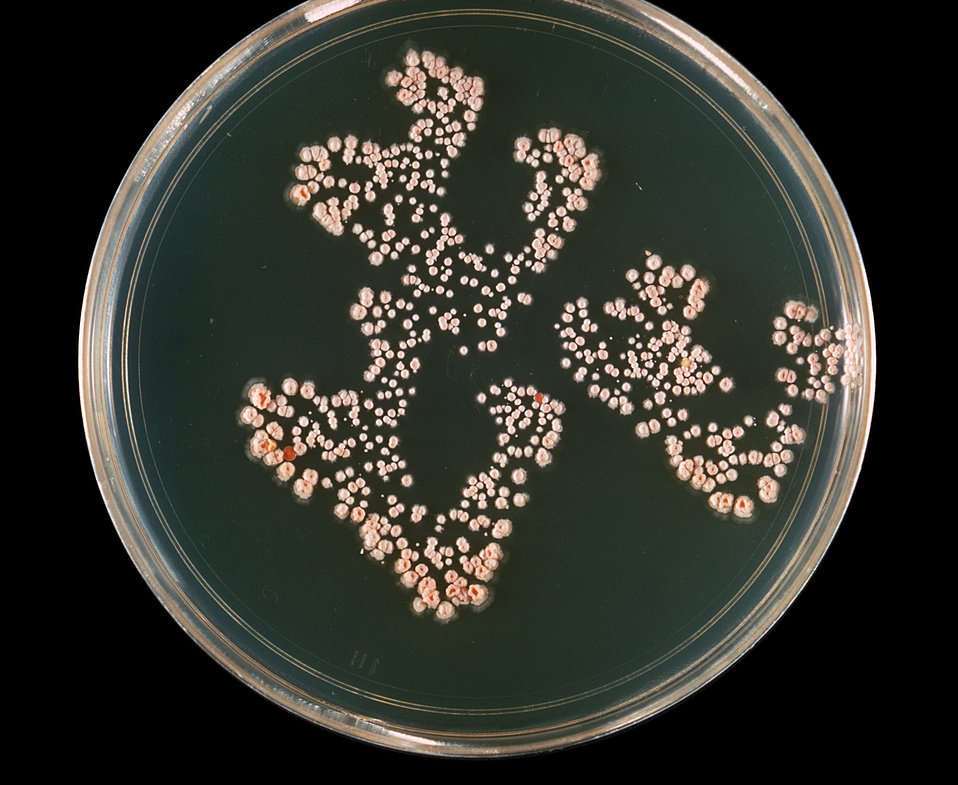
This is a plate culture of the bacteria Nocardia asteroides grown on 7H10 agar plates at 37� C.